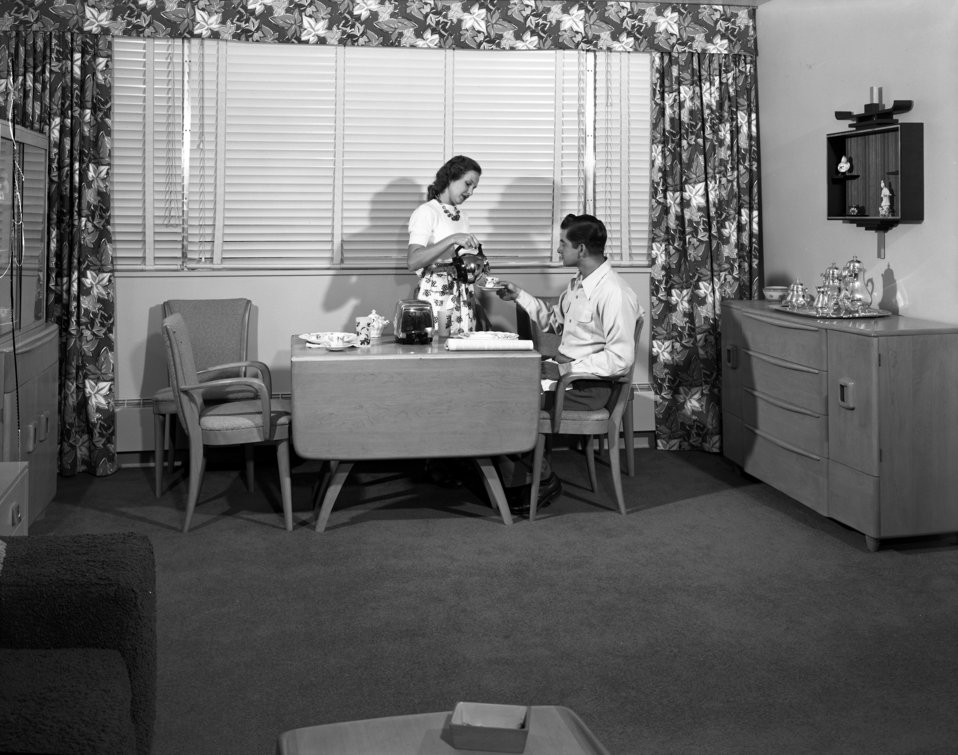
Interior of Garden Apartments Oak Ridge 1949

5719-5 DOE photo Ed Westcott Oak Ridge Tennessee